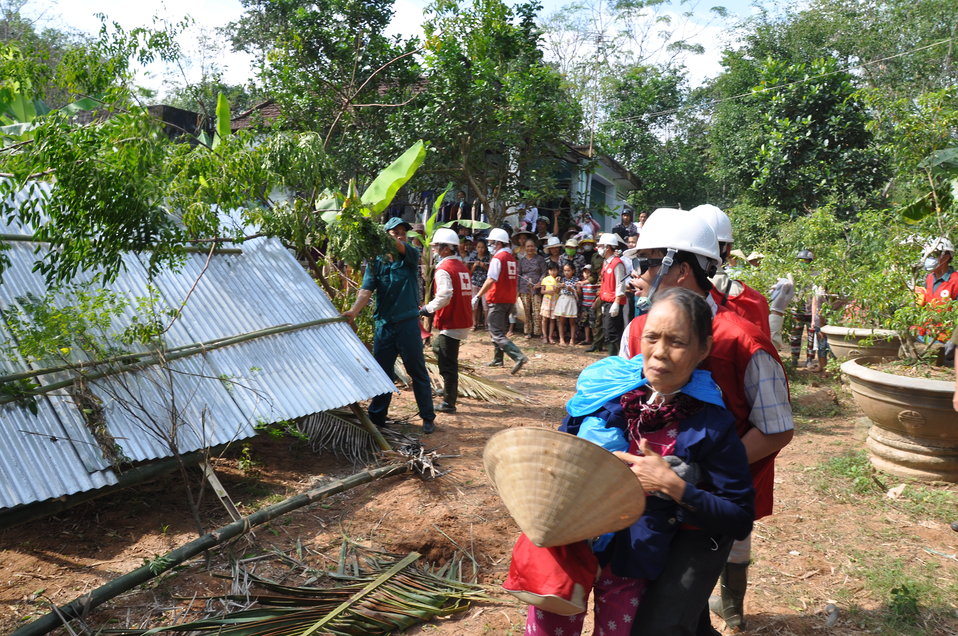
USAID, Red Cross Support Disaster Response Drill in Duy Hoa Commune, Quang Nam Province

Duy Hoa Commune, Quang Nam Province
December 5, 2012